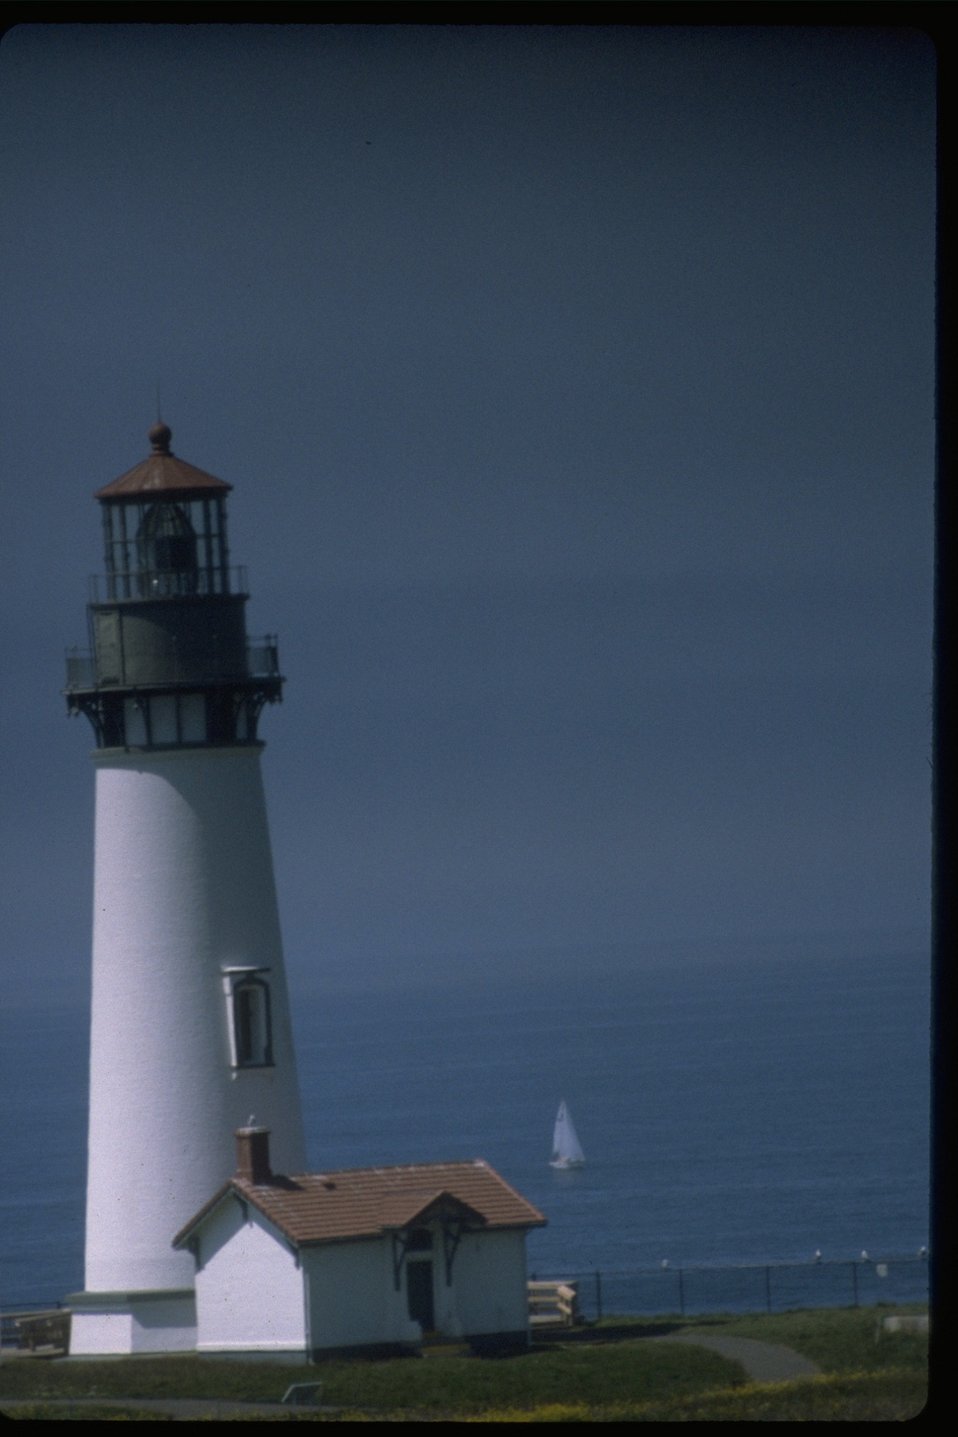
Vertical shot of Yaquina Head lighthouse with a sailboat off shore.